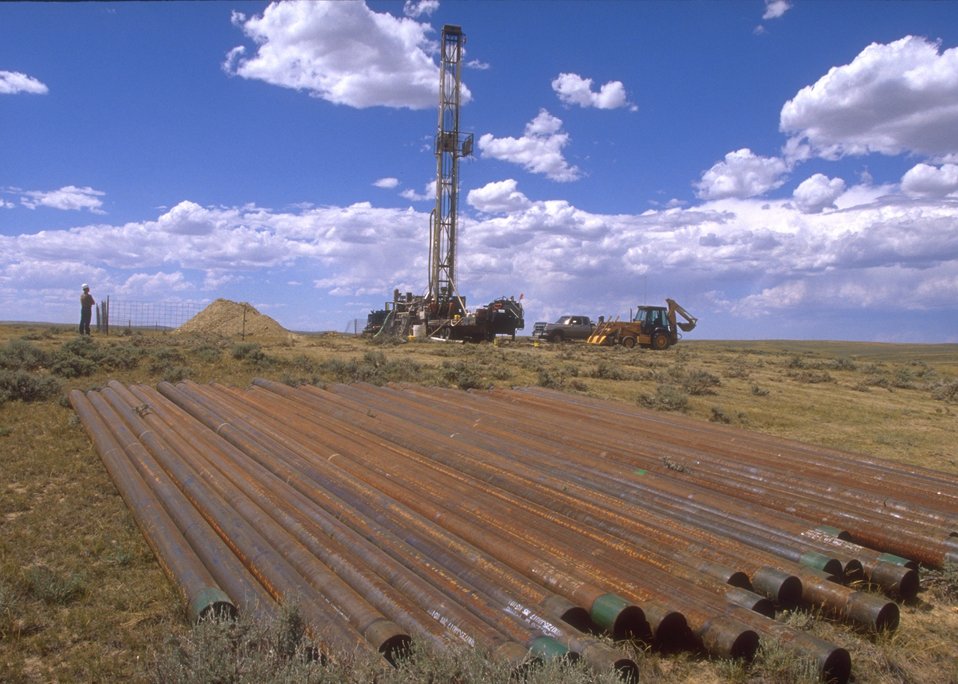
Drill site for coal bed methane, Buffalo Field Office.